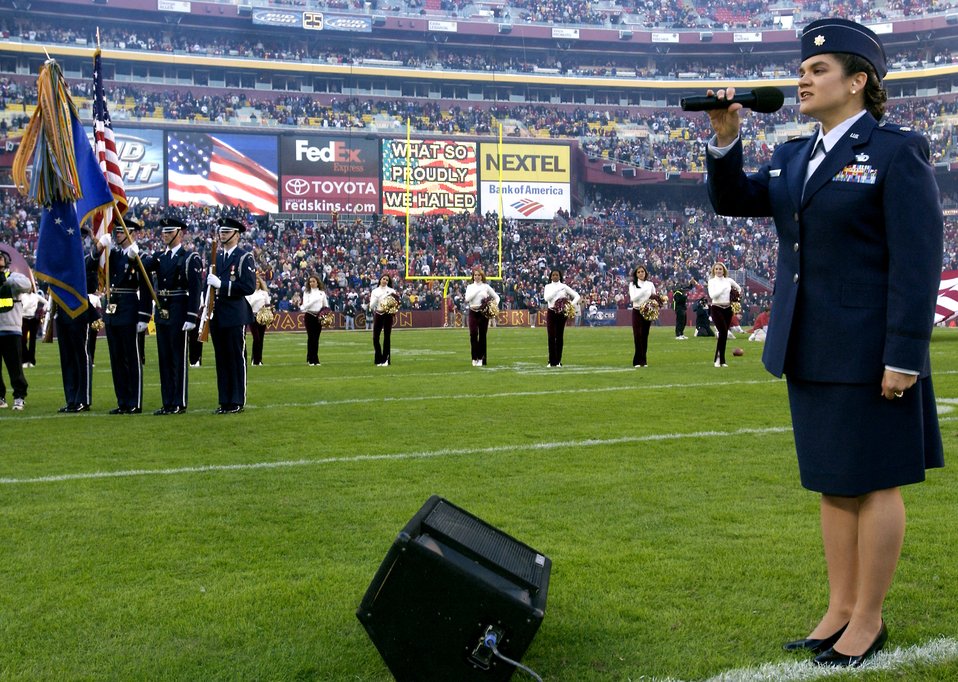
Air Force participates in Veterans Day tribute at Redskins' game

LANDOVER, Md. -- Maj. Katherine Strus sings the national anthem during opening ceremonies at the Washington Redskins vs. Cincinnati Bengals football game here Nov. 14. It was part of a Veterans Day salute to the Air Force. Major Strus is assigned to the Air Force's legislative liaison office at the Pentagon. Also part pf the tribute, a U.S. Air Force Honor Guard team posted the colors.